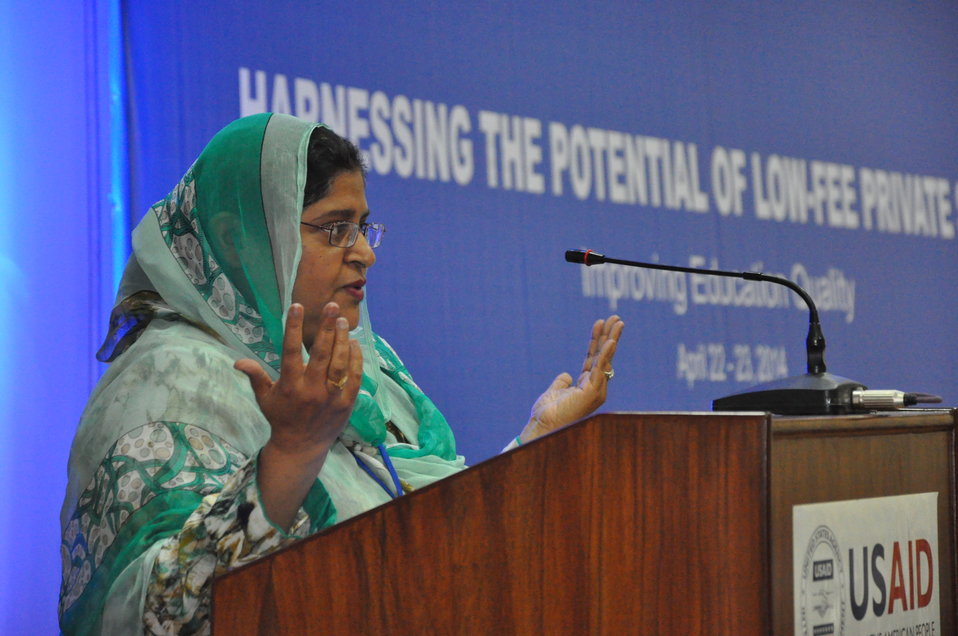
Recommendations being presented by a group leader after the breakout sessions